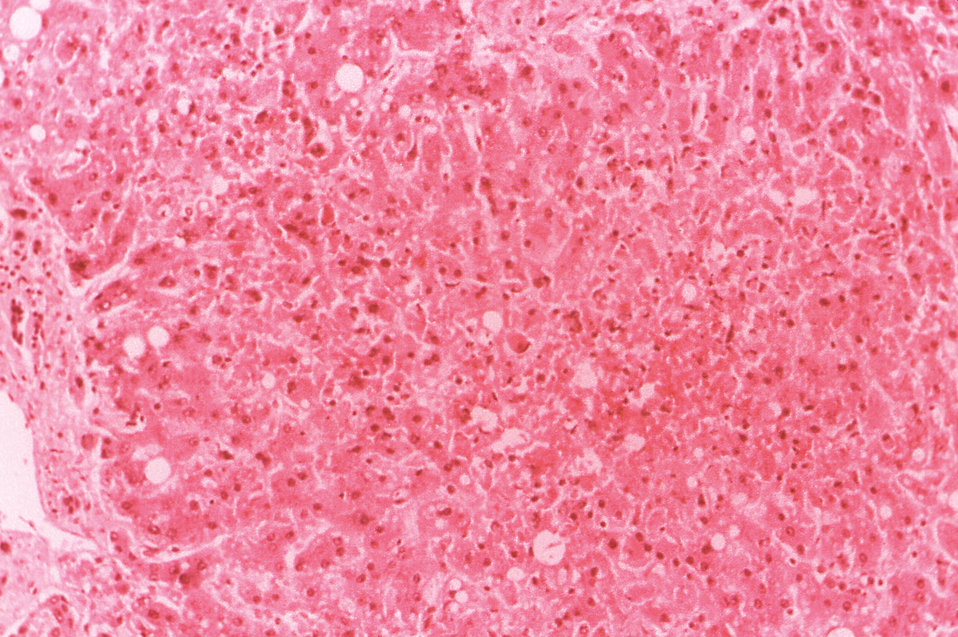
Under a magnification of 100X, this hematoxylin-eosin-stained (H&E) photomicrograph depicts the cytoarchitectural changes found in a liver tissue specimen extracted from a Rift Valley fever patient. This particular slide reveals the presence of 'severe necrosis in the mid-zonal and centrilobular regions with layers of intact hepatocytes recognizable around the portal spaces. Also present were hemorrhagic foci.'